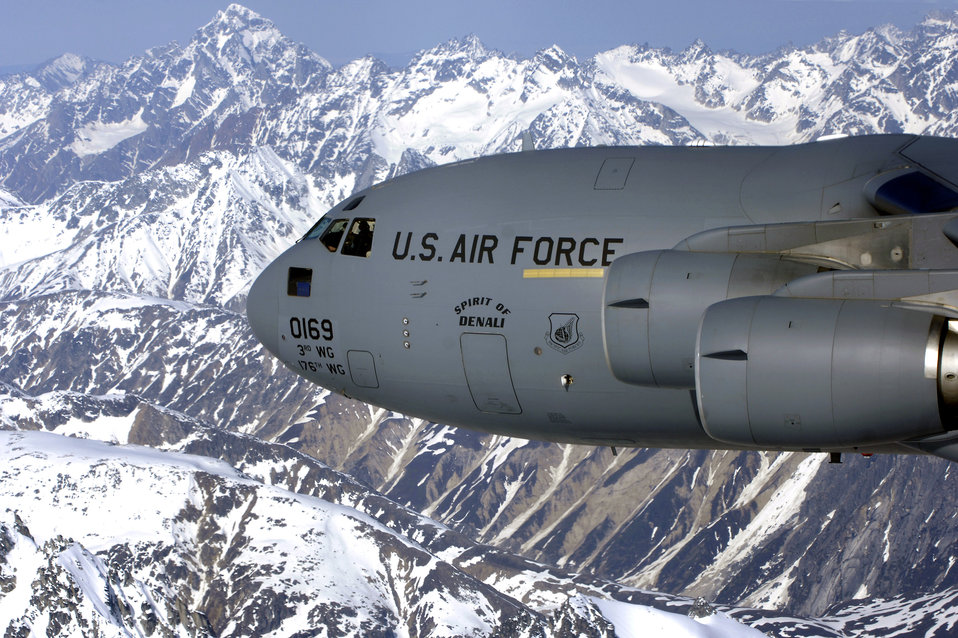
Elmendorf celebrates C-17 arrival

The